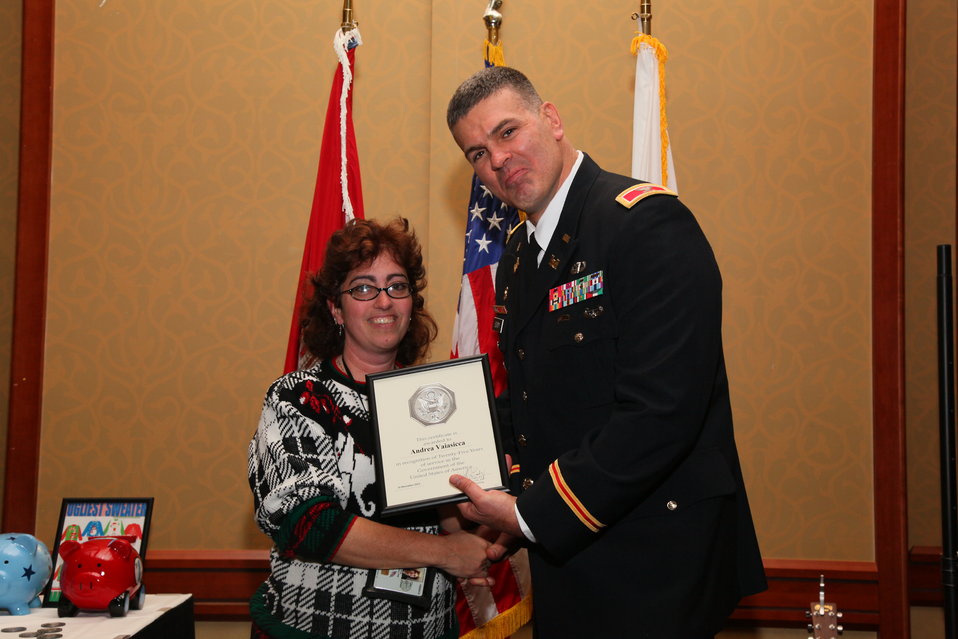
Sacramento District Holiday Party 2011